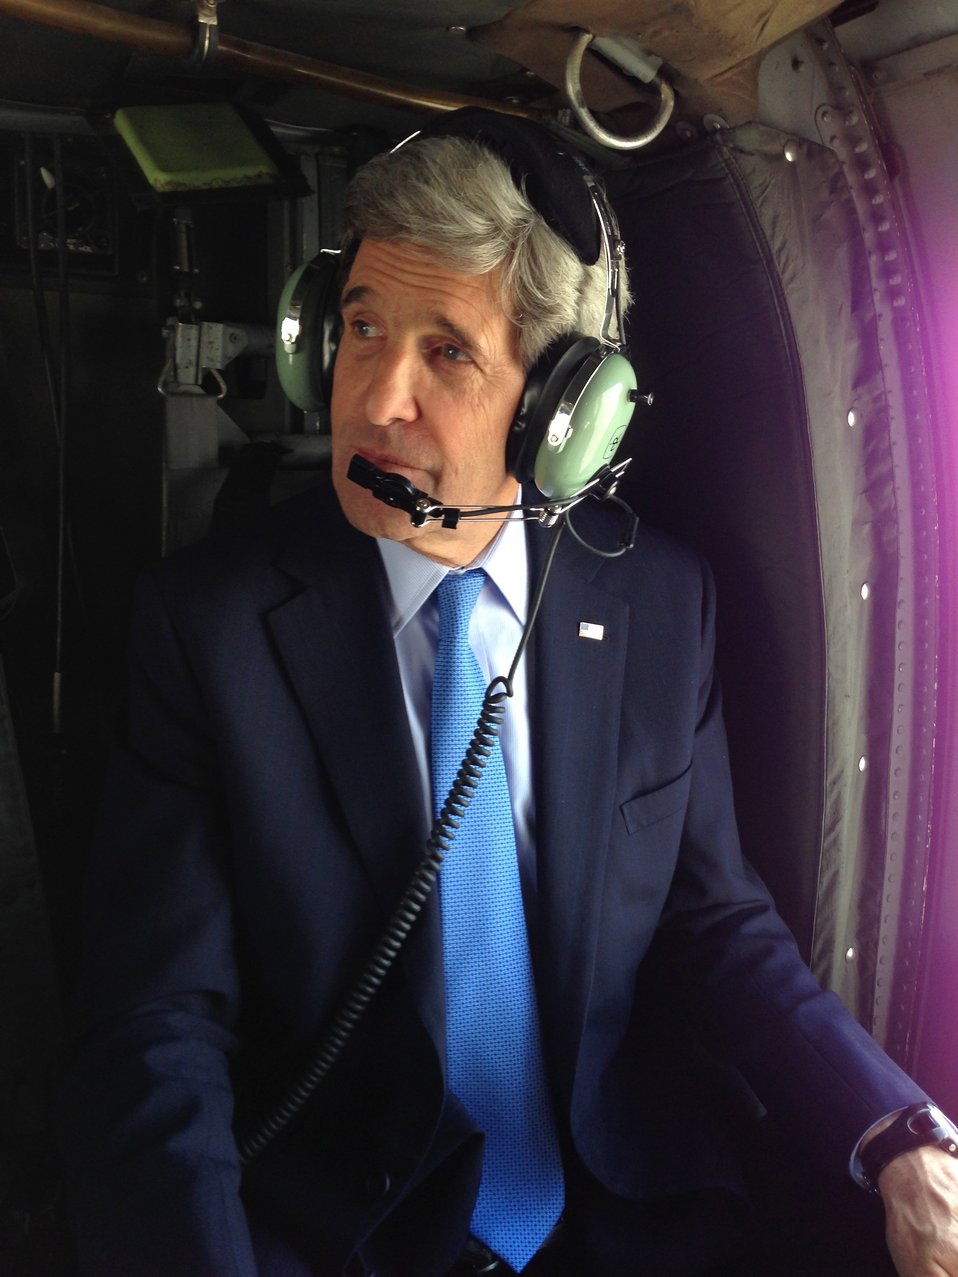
Secretary Kerry Departing U.S. Embassy Kabul

U.S. Secretary of State John Kerry departs the U.S. Embassy in Kabul in a U.S. military Blackhawk helicopter on March 26, 2013.